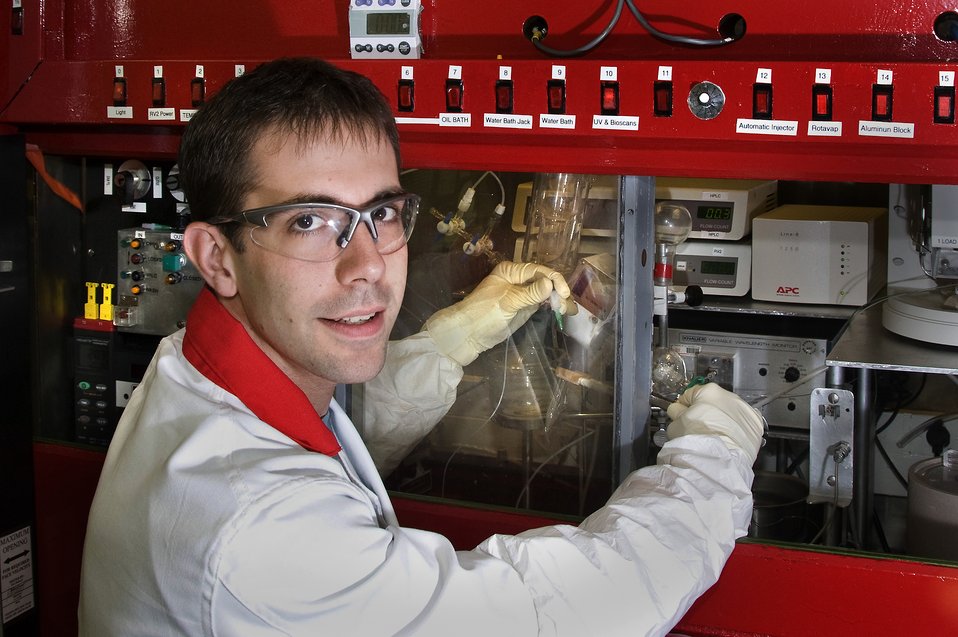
Brookhaven National Laboratory chemist Jacob Hooker, led the research in creating a simple, fast method for adding a radioactive tag to formaldehyde, a common organic chemical.

Using this labeled formaldehyde, scientists can now synthesize a whole new class of radiotracers, compounds that can be tracked by positron emission tomography (PET) scanners to monitor the movement and interactions of a wide range of chemical in the human body. The PET studies and radiotracers developed at BNL and elsewhere have greatly advanced scientists' understanding of disease such as cancer and the neurochemistry of drug addiction.